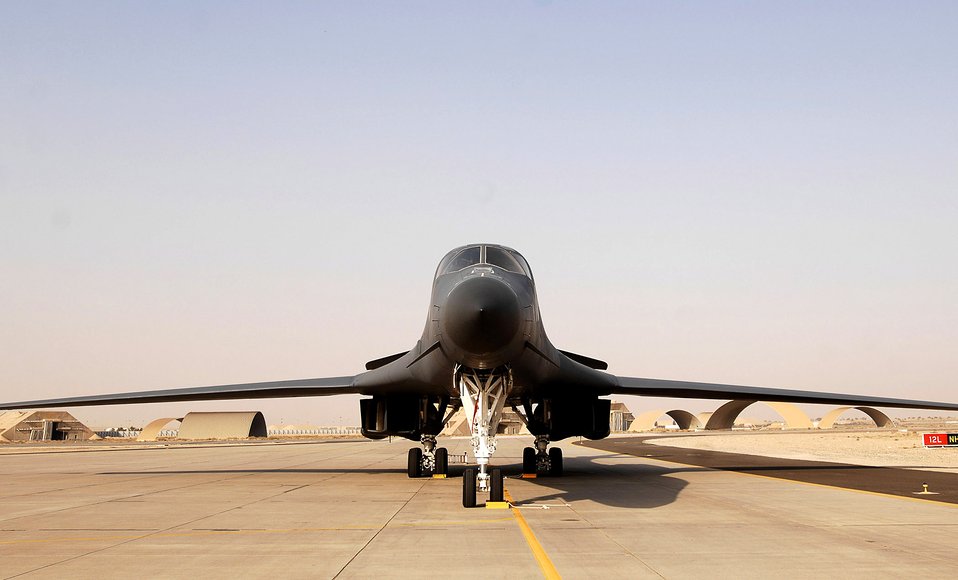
Feb. 13 airpower summary: B-1Bs destroy targets

A B-1B Lancer stands by for its mission Feb. 12, at a Southwest Asia air base. One of the B-1B's missions is to provide close-air support for coalition forces throughout the area of responsibility as part of operations Enduring Freedom and Iraqi Freedom.